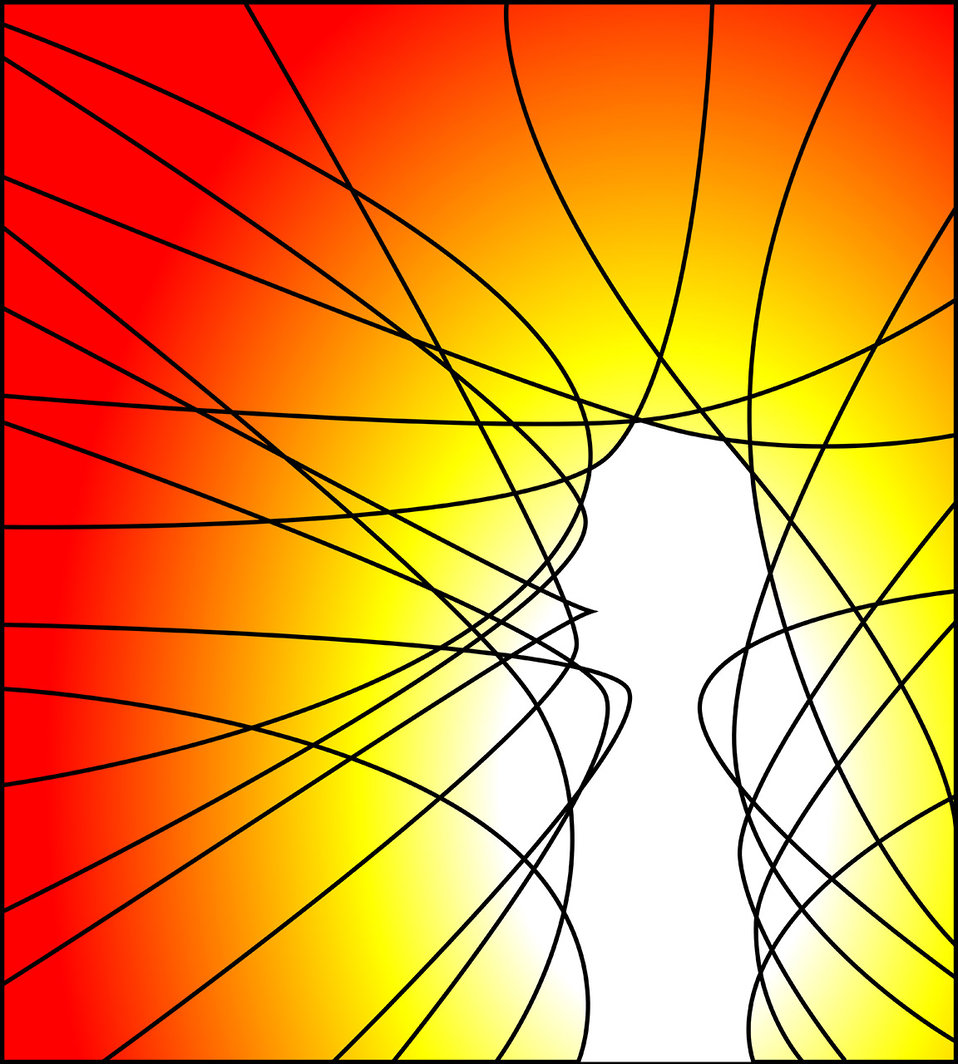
Man

A man made by lines which can represent the origin of the mankind or some spirituality..